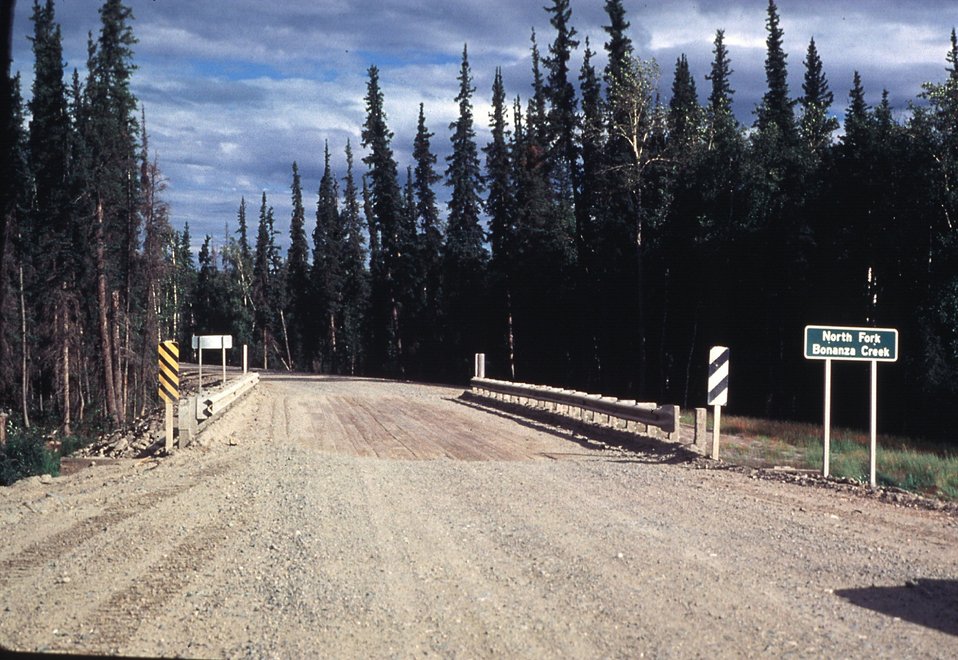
Dalton Highway, N. Fork Bonanza Creek